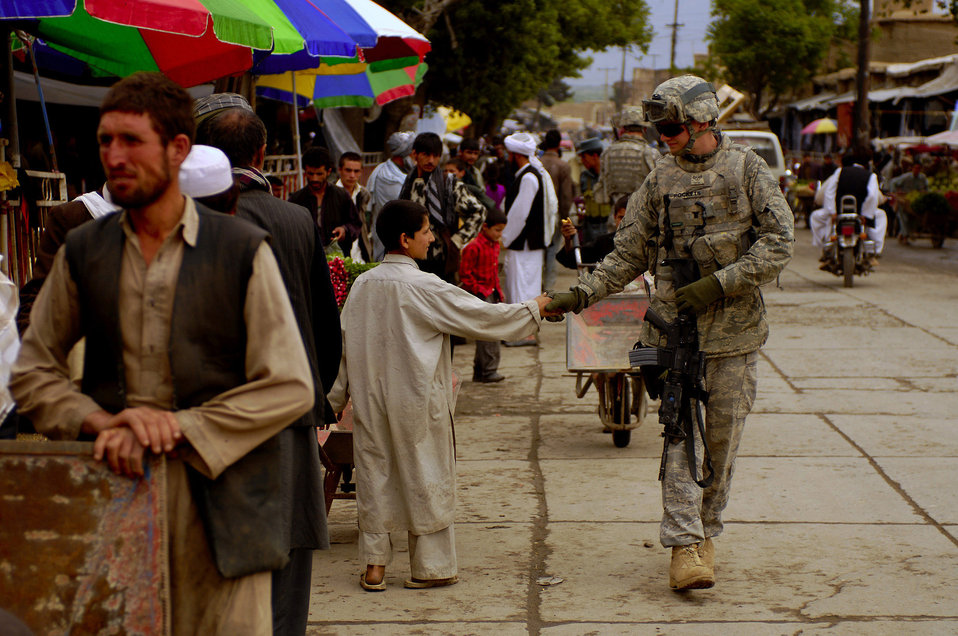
Bagram Airmen provide training to Afghan police

Senior Airman Mark Ostrander shakes hands with a young Afghan boy during a foot patrol April 22 in the Pashwan District. Airman Ostrander is a member of the Bagram Provincial Reconstruction Team's Police Technical Advisory Team and is deployed from the 55th Security Forces Squadron at Offutt Air Force Base, Neb.